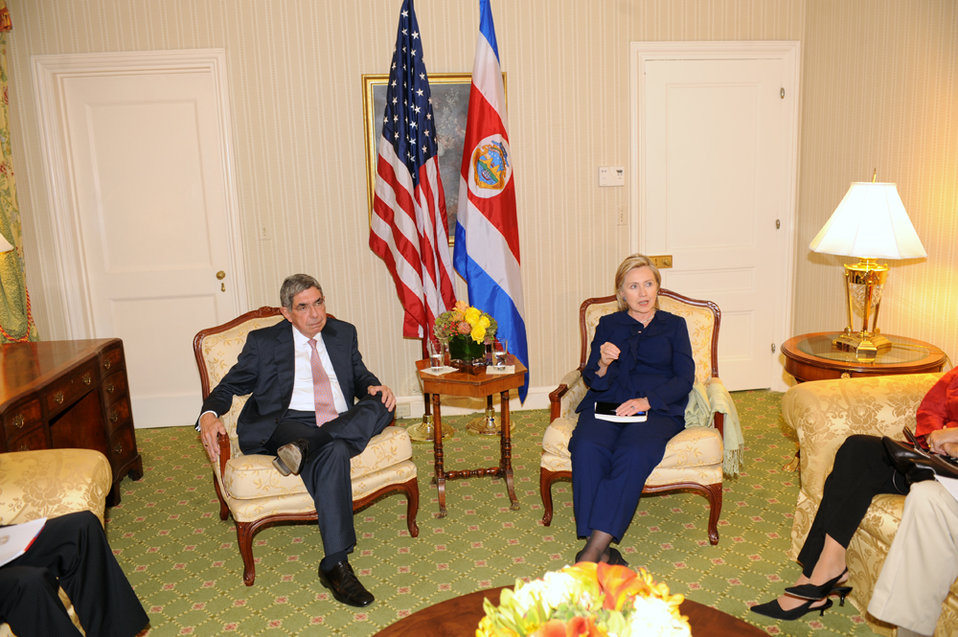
UNGA 2009: Secretary Clinton Meets With Costa Rican President

U.S. Secretary of State Hillary Rodham Clinton meets with Costa Rican President Óscar Arias at the Waldorf Astoria hotel during the 64th Session of the UN General Assembly in New York City, New York September 21, 2009.